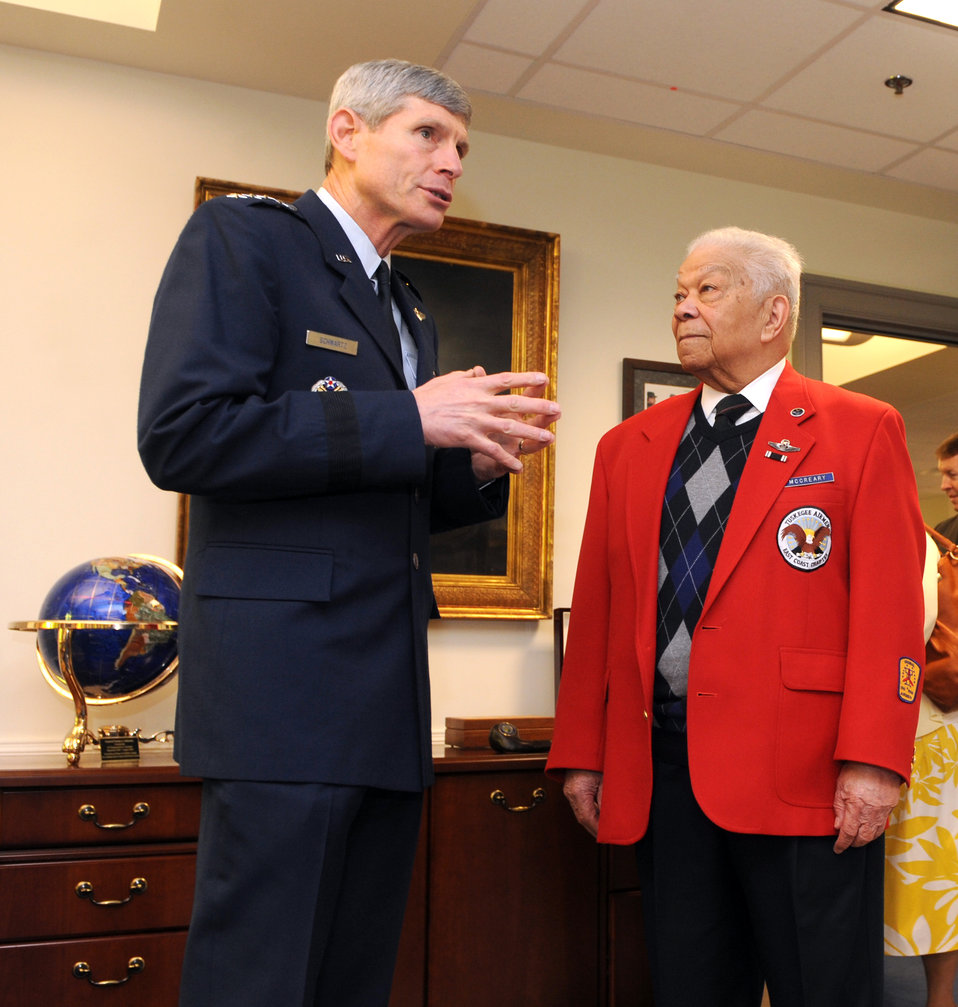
‘Red Tail’ member visits the Pentagon

Air Force Chief of Staff Gen. Norton Schwartz speaks with retired Lt. Col. Walter McCreary during an office call in the Pentagon on March 16, 2012. McCreary, an original Tuskegee Airman, visited the Air Force Art Gallery, the Pentagon 9/11 Memorial and the Tuskegee Airmen exhibit in the Pentagon.